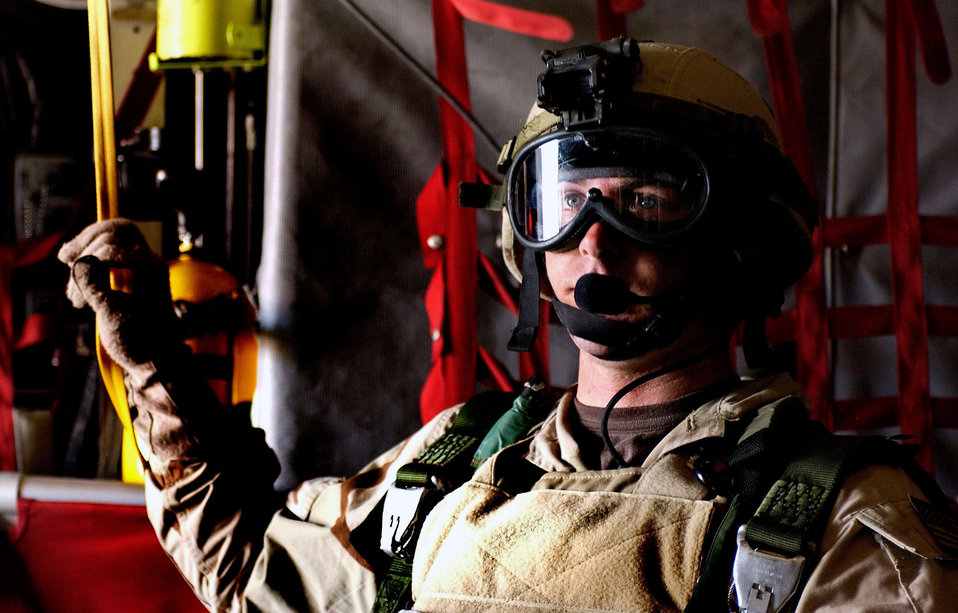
Stand ready

NAVAL AIR STATION FALLON, Nev. -- An Air Force pararescueman prepares to parachute out of an HC-130 here during Desert Rescue XI on Aug. 11. The airman is assigned to the 347th Rescue Wing at Moody Air Force Base, Ga. The joint-service combat search and rescue training exercise simulates downed aircrew behind enemy lines and allows airmen to practice rescue-related missions. They also experiment with new techniques in realistic scenarios.